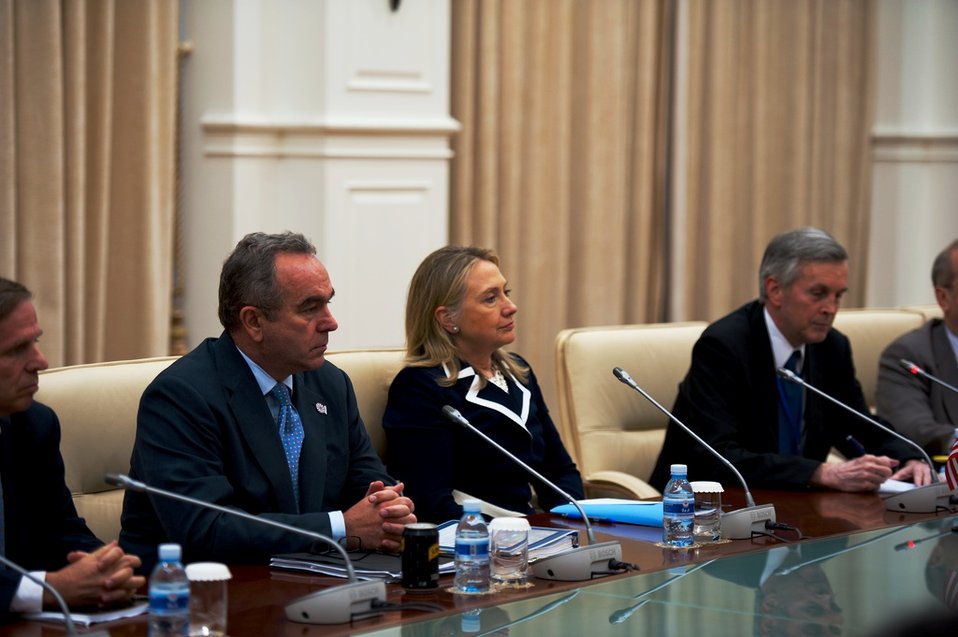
Secretary Clinton Meets With Chinese Foreign Minister Yang

U.S. Secretary of State Hillary Rodham Clinton meets with Chinese Foreign Minister Yang Jiechi in Phnom Penh, Cambodia, on July 12, 2012.